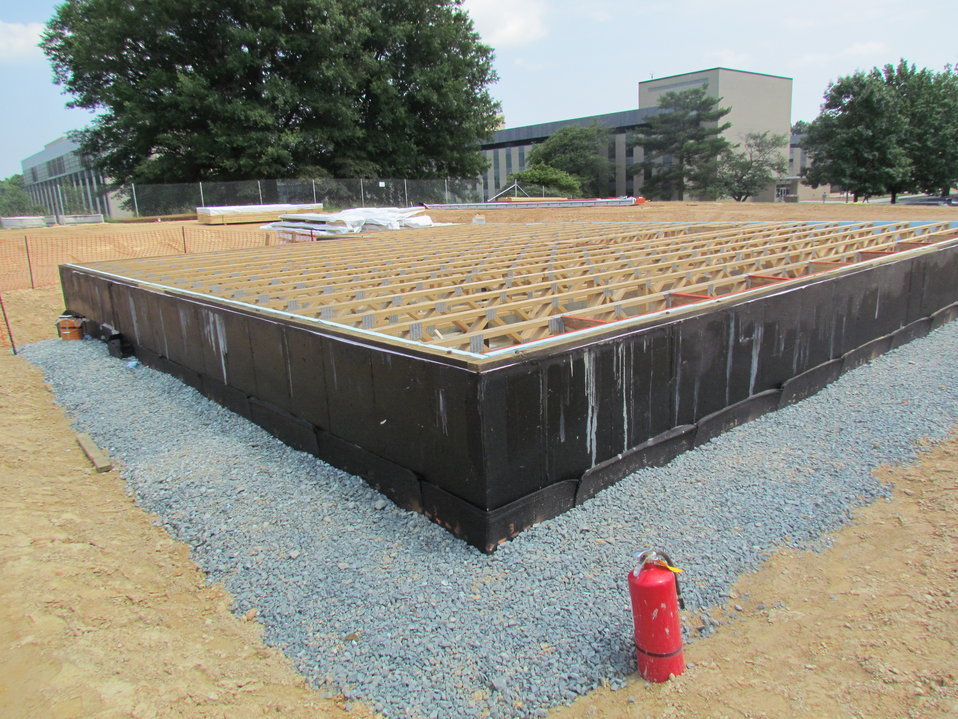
Net-Zero Energy Residential Test Facility - Picture showing above grade basement walls and open web floor trusses in place. Building 226 is in background.